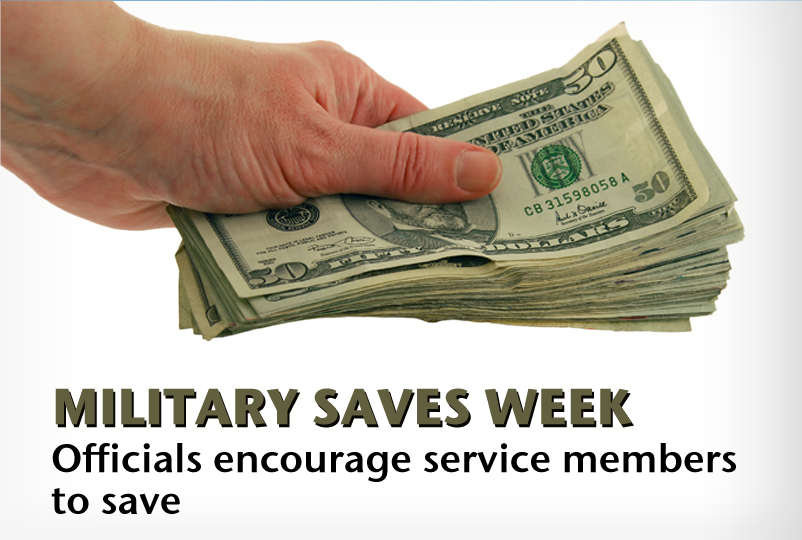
Military Saves Week